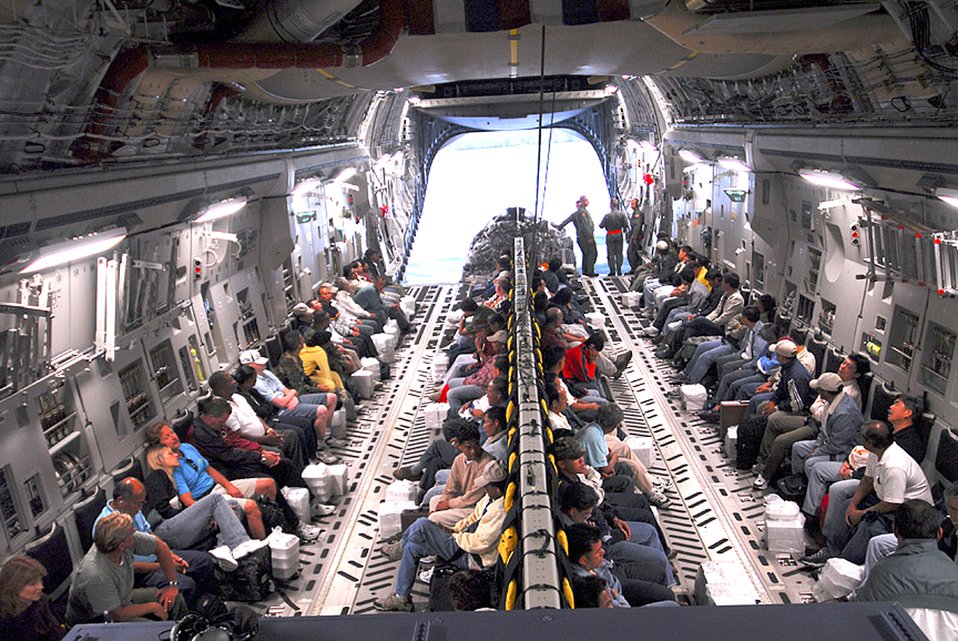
Wake Island evacuation

A C-17 Globemaster III from the 535th Airlift Squadron at Hickam Air Force Base, Hawaii, is prepared to leave the tarmac at Wake Island Aug. 29 as Super Typhoon Ioke approached.